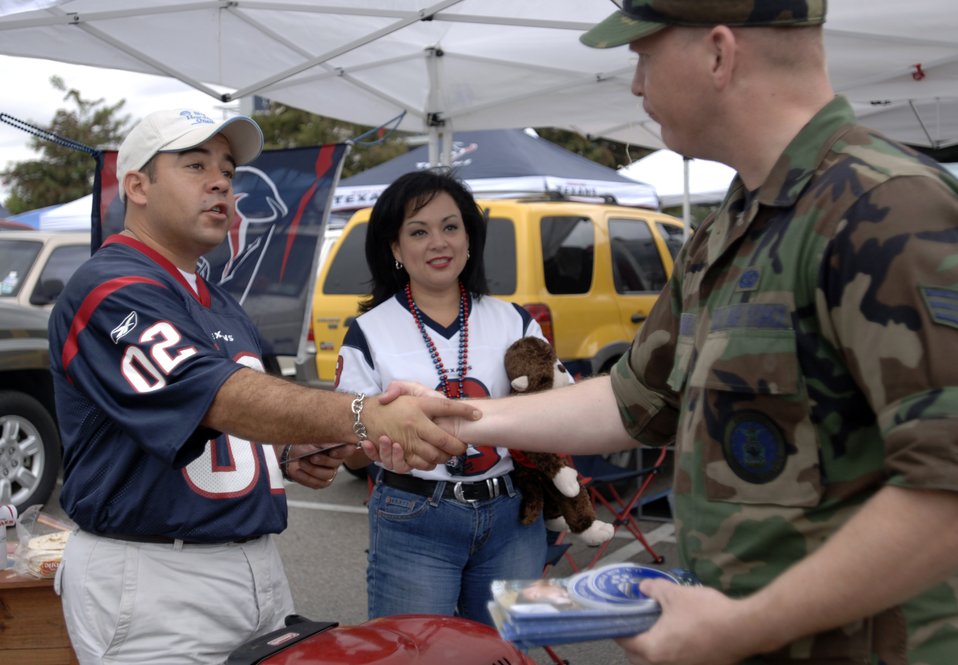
Letter to Airmen encourages 'Ambassadors in Blue'

In his most recent Letter to Airmen, Secretary of the Air Force Michael W. Wynne charges all Airmen to capitalize on their talents as ambassadors to their communities and communicate the service's role in the war on terrorism.